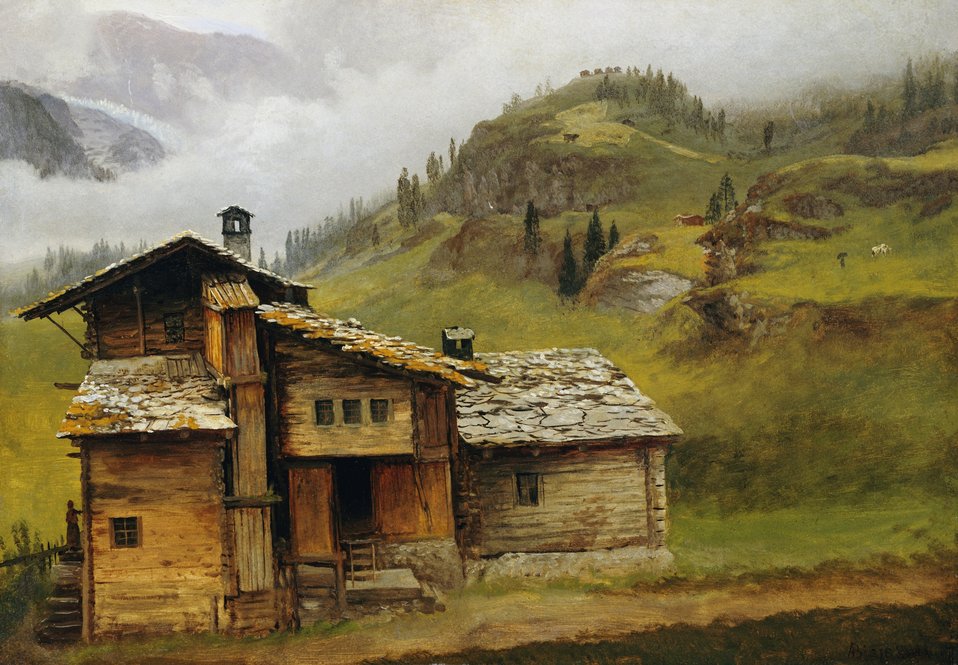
Albert Bierstadt - Mountain House